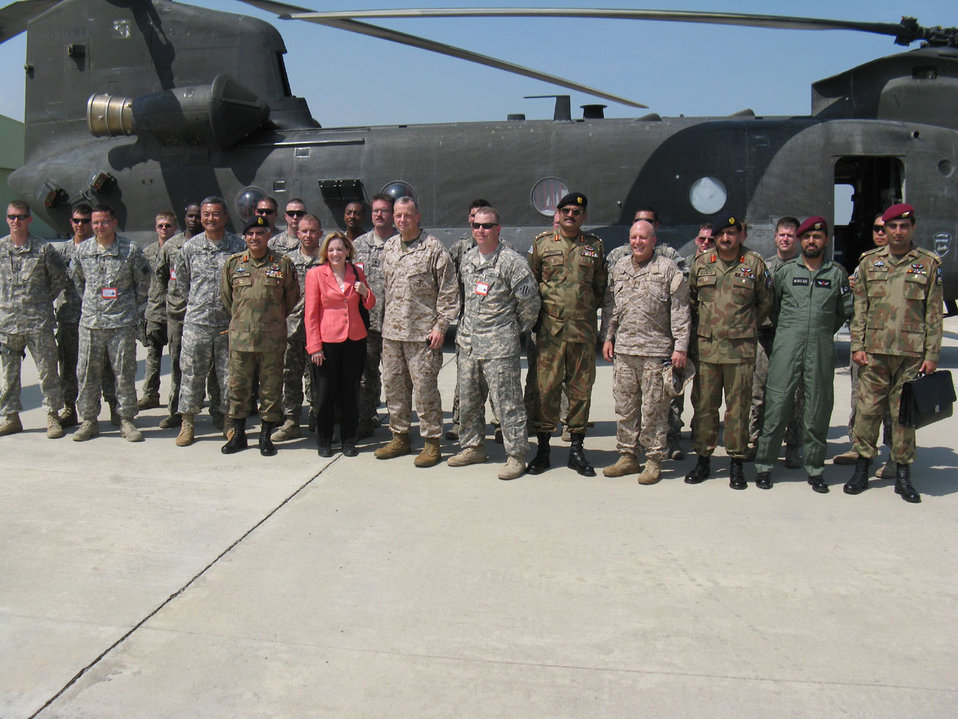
Ambassador Patterson and Lt. Gen. Allen Stand Alongside Pakistani and U.S. Military Members

U.S. Ambassador to Pakistan Anne Patterson and U.S. Marine Corps Lt. Gen. John Allen, acting U.S. Central Command commander, stand alongside Pakistani and U.S. military members in front of a U.S. Army CH-47 Chinook helicopter at Ghazi Air Base in Islamabad, Pakistan, on August 5, 2010.